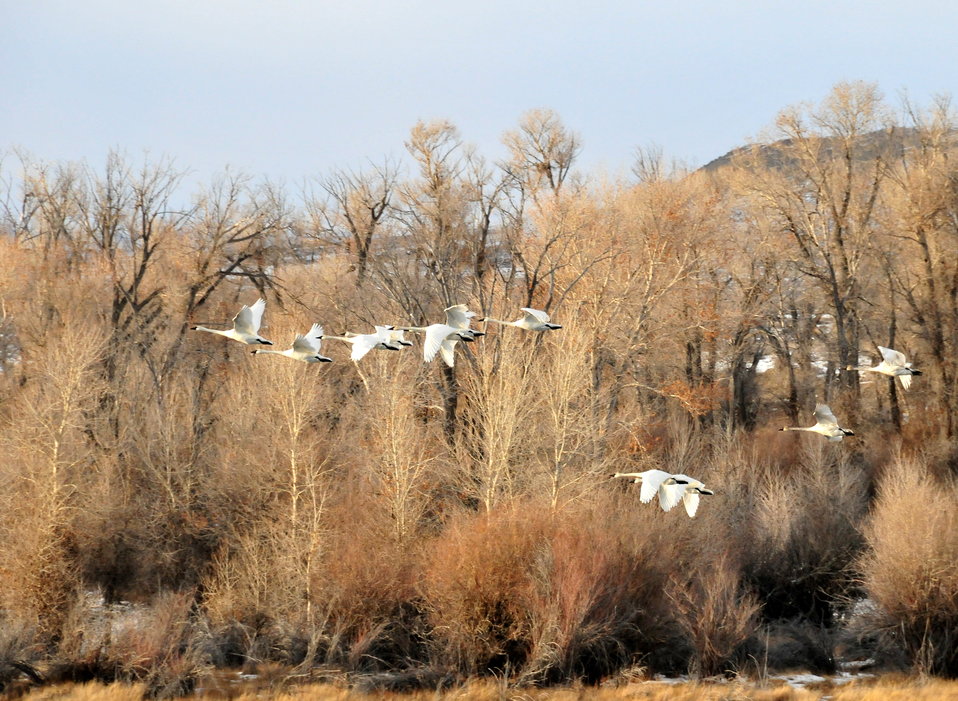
Trumpeter Swans on Seedskadee National Wildlife Refuge 01

Trumpeter swans wintering on Seedskadee NWR have been increasing over the last decade. A high count of 304 in 2014. Open water below Fontenelle Dam, abundant submerged aquatic vegetation in the Green River, and reduced disturbance by humans in the winter months provide the conditions needed for trumpeters in the winter months.